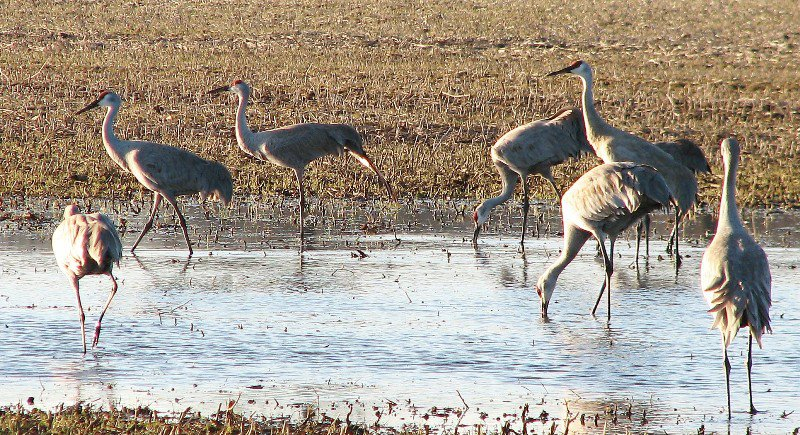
sandhill cranes staging at Muscatatuck NWR

Muscatatuck National Wildlife Refuge, IN
November 2011